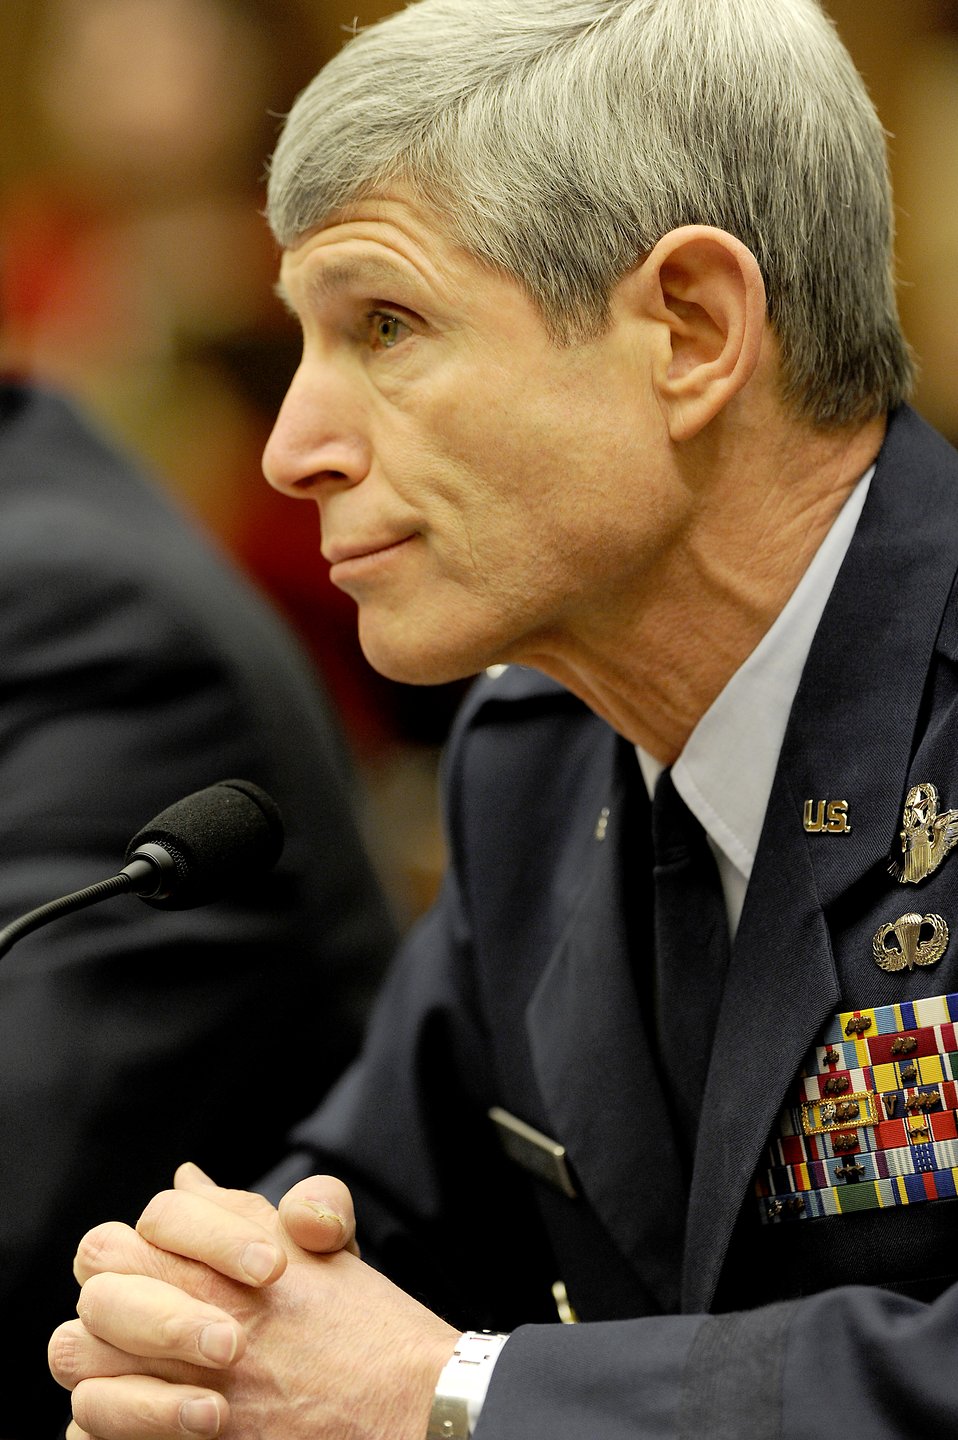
Chief of staff's testimony addresses 'Don't Ask, Don't Tell' repeal initiative

Air Force Chief of Staff Gen. Norton Schwartz serves as a witness before the House Armed Services Committee Feb. 23, 2010, in the Rayburn House Office Building on Capitol Hill. General Schwartz and Air Force Secretary Michael Donley answered questions that heavily leaned toward the status of the F-35 Lightning II joint strike fighter program, alignment with allies in future aircraft development, force readiness and the service's position on the review of the